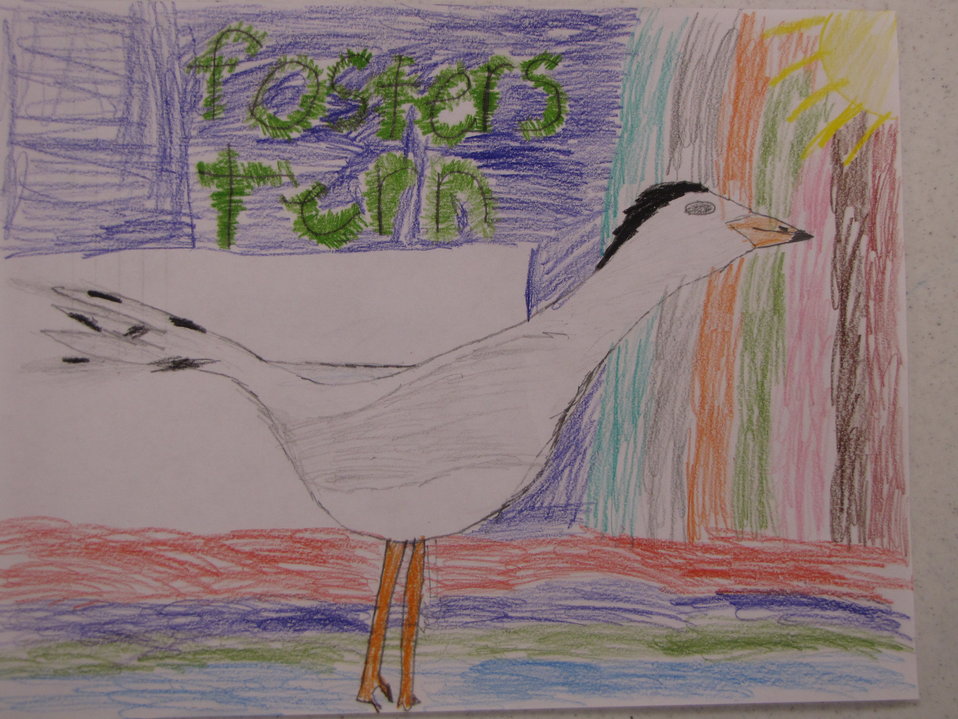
Forster's tern, by Ben Stewart - 2nd grade. One of the class winners for the annual Bird Banner competition. Community school kids draw and color migratory birds and 90 of the winners from over 1000 entries are turned into poster-sized banners to hang down main street of Brigham City this summer.